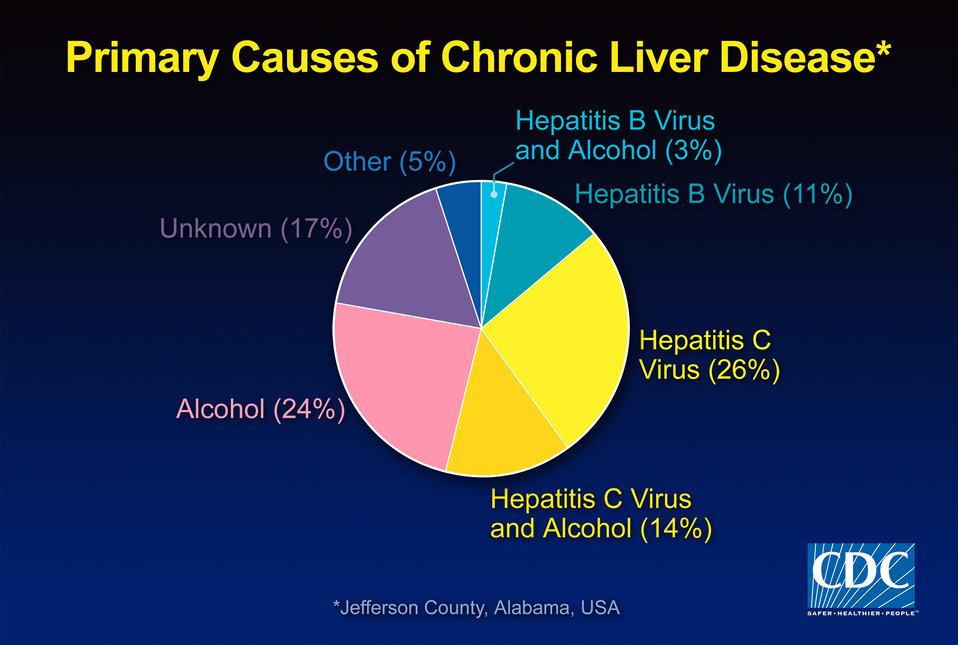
Primary Causes of Chronic Liver Disease.